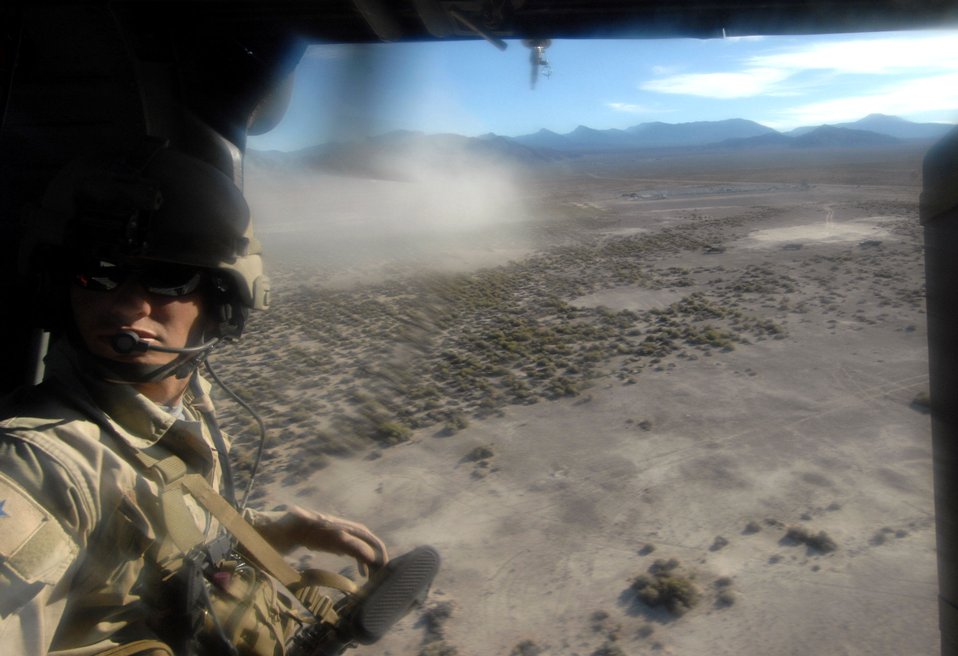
Show of force

A pararescuemen from the 58th Rescue Squadron at Nellis Air Force Base, Nev., scans terrain during combat search and rescue operations during a firepower demonstration Sept. 14 on the Nevada Test and Training Range. The demonstration gave the general public a close-up and realistic view into the Air Force's ability to perform its wartime mission.